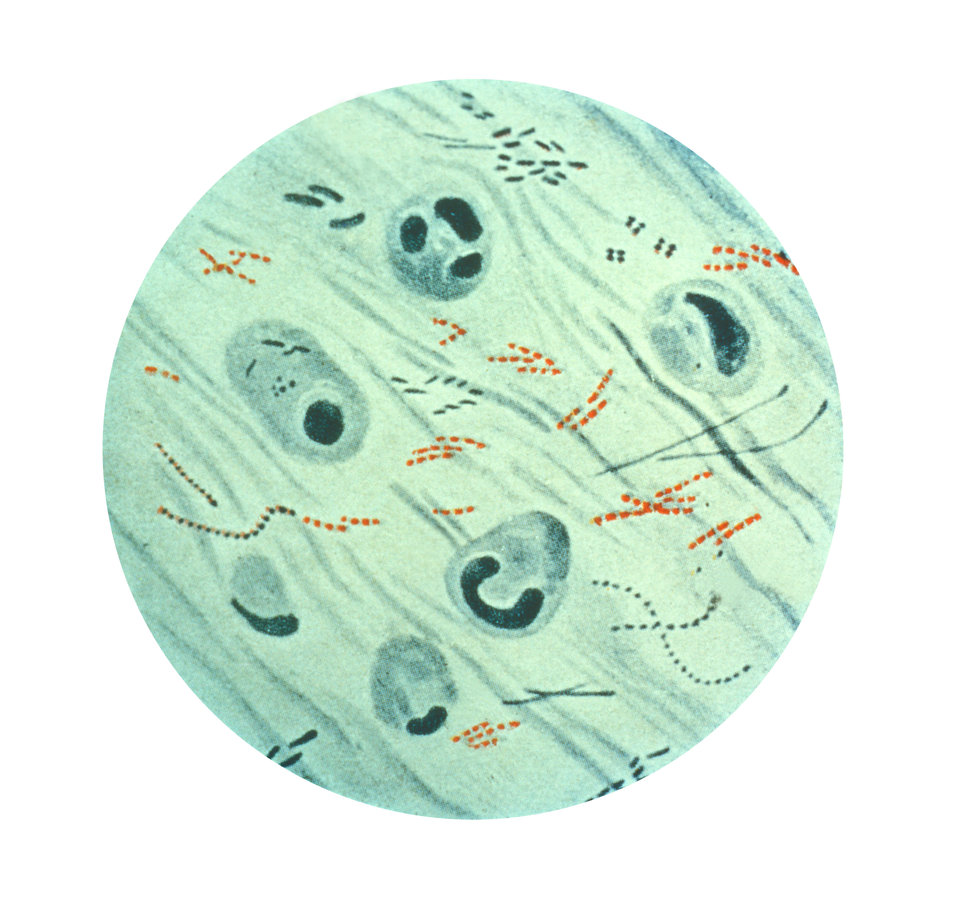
A photomicrograph of Mycobacterium tuberculosis bacteria from a sputum specimen, and viewed with Ziehl-Neelsen stain.